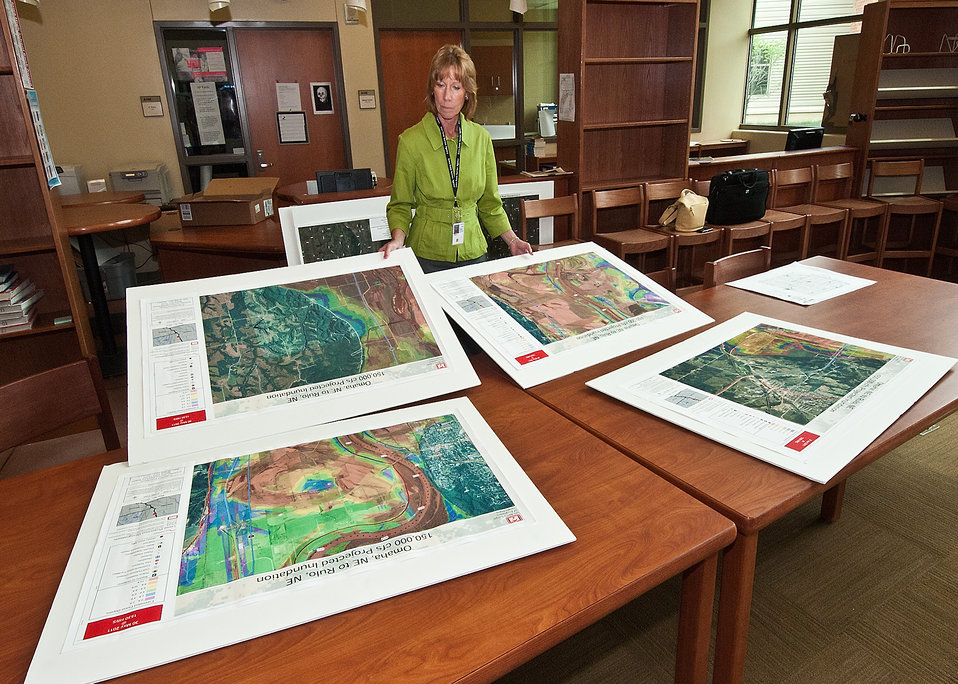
Bobbi Schaaf, Farm Services Agency, District Director, Southwest Iowa prepares Army Corps of Engineers Inundation Maps representing the possible coverage of the Missouri River floodwaters prior to a town hall meeting held by Agriculture Secretary Tom Vilsack at the Glenwood Community High School in Glenwood, Iowa on Thursday, June 16, 2011. Farmers, local and regional media listened and questioned Secretary Vilsack on the cause of the floodwaters along the Missouri River affecting Iowa and Nebraska. Secretary Vilsack offered advice and assistance available through the United States Department of Agriculture and other federal agencies.